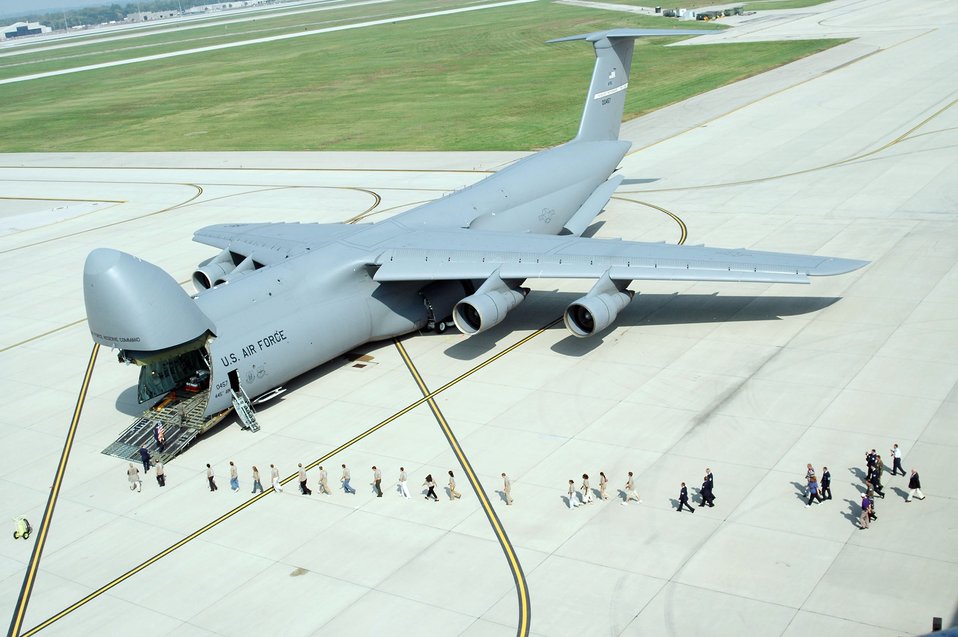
Reserve wing welcomes changes to flying mission

WRIGHT-PATTERSON AIR FORCE BASE, Ohio -- People line up to enter the 445th Airlift Wing's first C-5 Galaxy after its arrival here Oct. 3. The Air Force Reserve Command unit will receive 10 more C-5s to replace its retiring C-141 Starlifter aircraft.